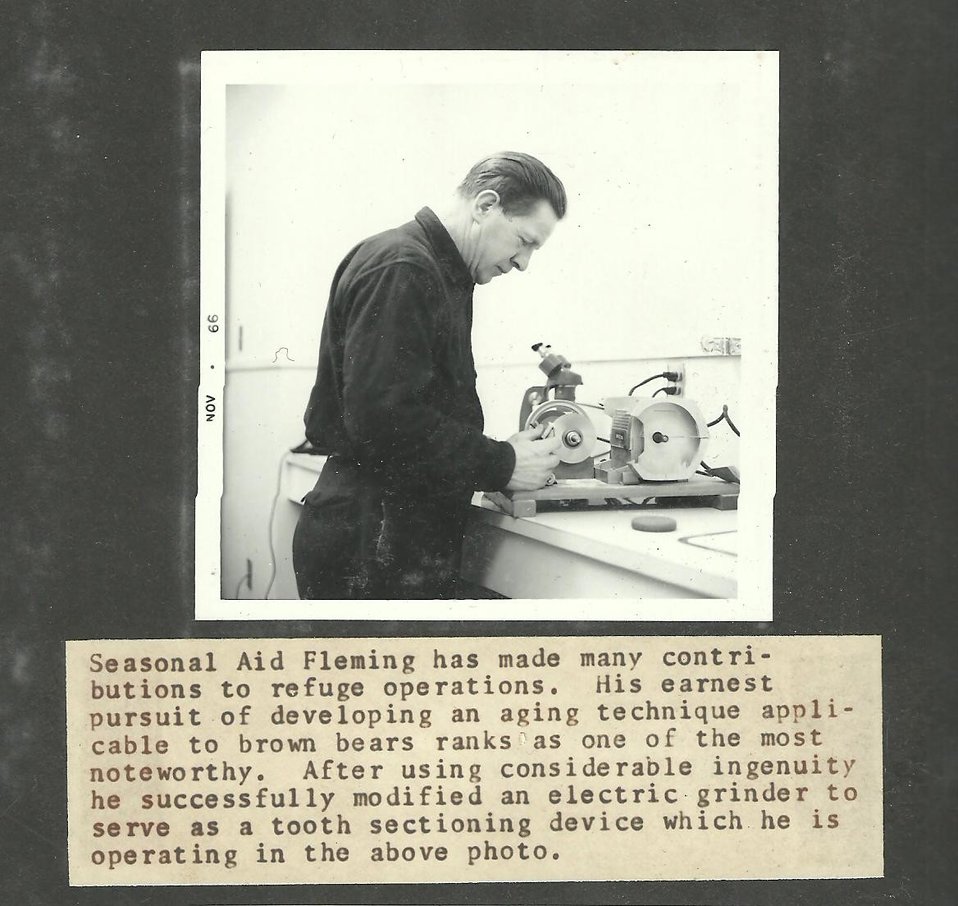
(1966) Seasonal Fleming

Credit: USFWS

Source and Contact: Kodiak National Wildlife Refuge